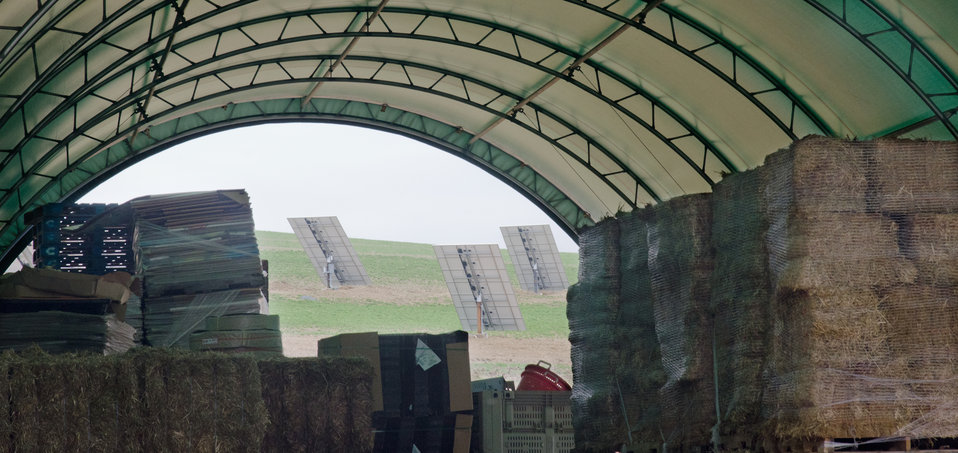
Solar arrays beyond compressed hay bales at the Heidel Hollow Farm, on Wednesday, April 20, 2011. A family owned farm since 1852 is an 1,800 acre operation in Germansville, PA. Led by David Fink, President of Heidel Hollow Farms, they mainly produce and compact hay for export and grow produce on 300 acres for local sale. With the financial help of the U.S. Department of Agriculture (USDA) an 896 panel solar array was recently installed on non farmable diversion ditches. Rated at 200 kilowatts, they project 240 megawatts of electricity to be produced each year, providing up to 70% of the farms electrical needs. Additionally, USDA financial assistance made it possible to replace the hay compactor’s diesel engines with clean low-maintenance, low operating cost electric motors to power the compactor's hydraulic system. The compactor increases the density of baled hay by two and half times for more efficient shipping to overseas customers.